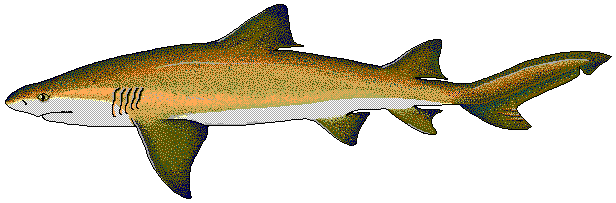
Lemon shark